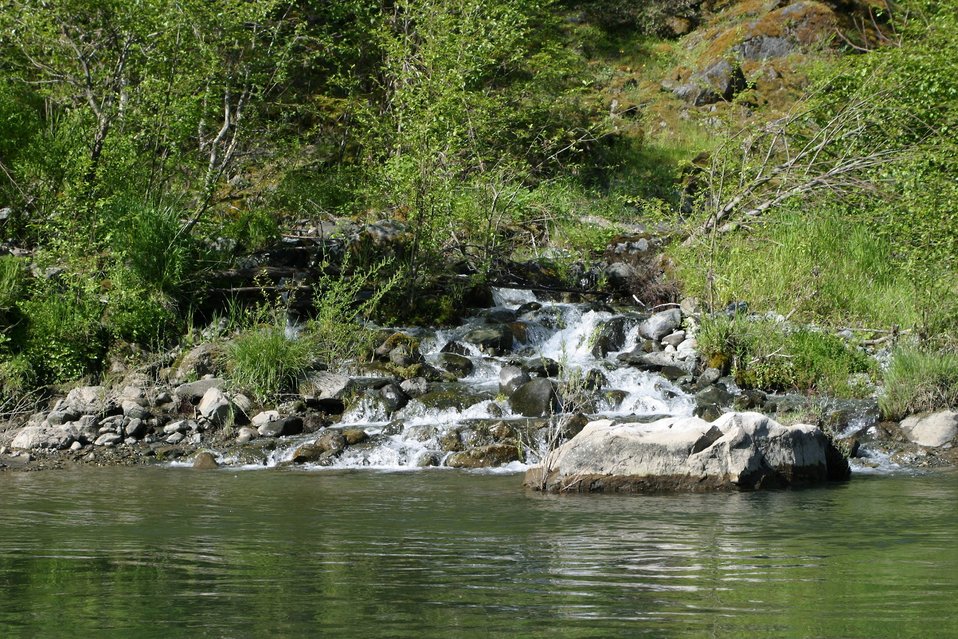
Wild section of the Rogue River from Grave Creek to Foster Bar May 19 to May 22.